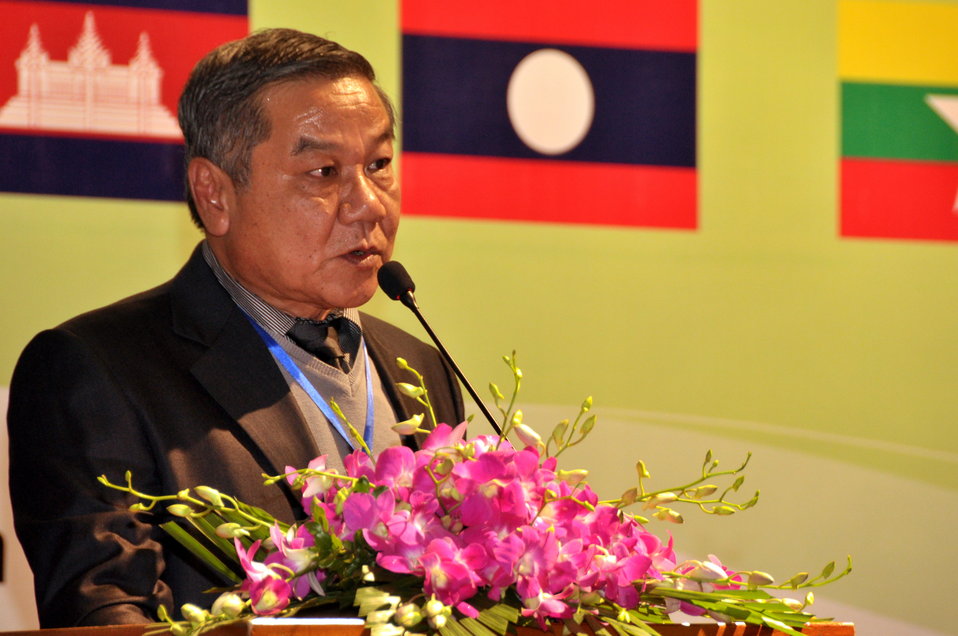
Mr. Phothong Ngonphachanh, Deputy Director General of Road and Bridge Department, Ministry of Public Works and Transport, Laos, addresses the Lower Mekong Initiative Infrastructure Best Practices Exchange

Hanoi: January 14, 2013